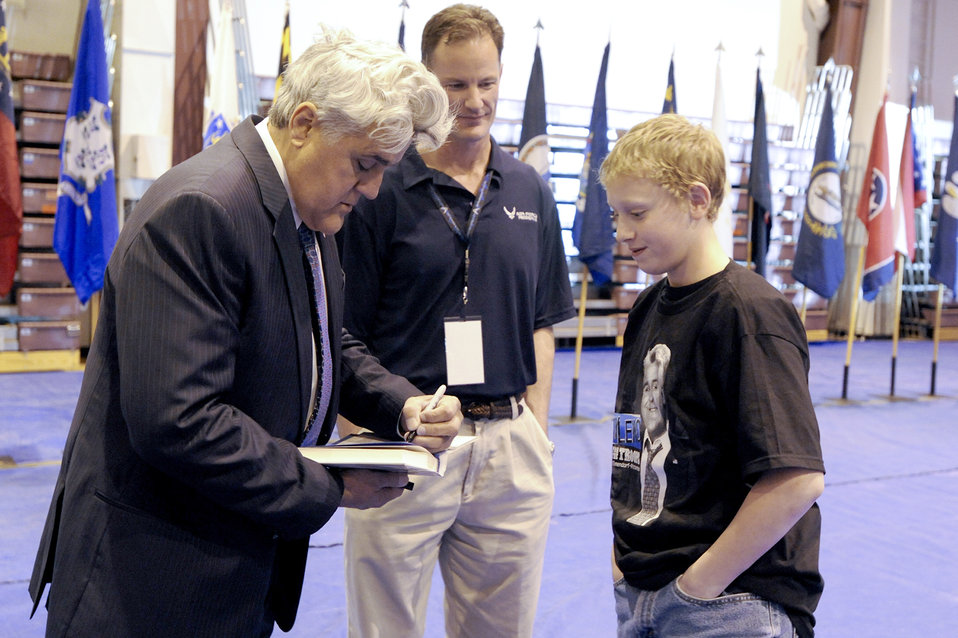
Jay Leno at JBER

Jay Leno signs a copy of his autobiography for Jared Layton, the son of Senior Master Sgt. Timothy Layton, while Col. Eric Overturf looks on. Sergeant Layton is with the 962nd Aircraft Maintenance Unit. Colonel Overturf is the 477th Fighter Group commander.